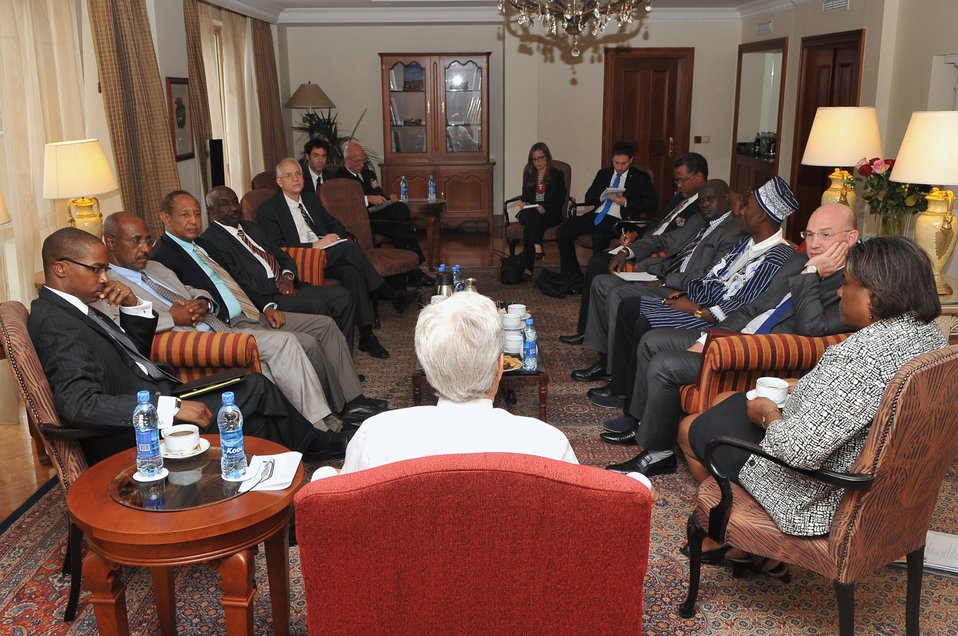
Secretary Kerry Meets With African Security Experts in Addis Ababa

U.S. Secretary of State John Kerry meet with a group of African security experts on May 1, 2014, following a round of government and business meetings in Addis Ababa, Ethiopia, at the outset of the six-day trip through Africa.